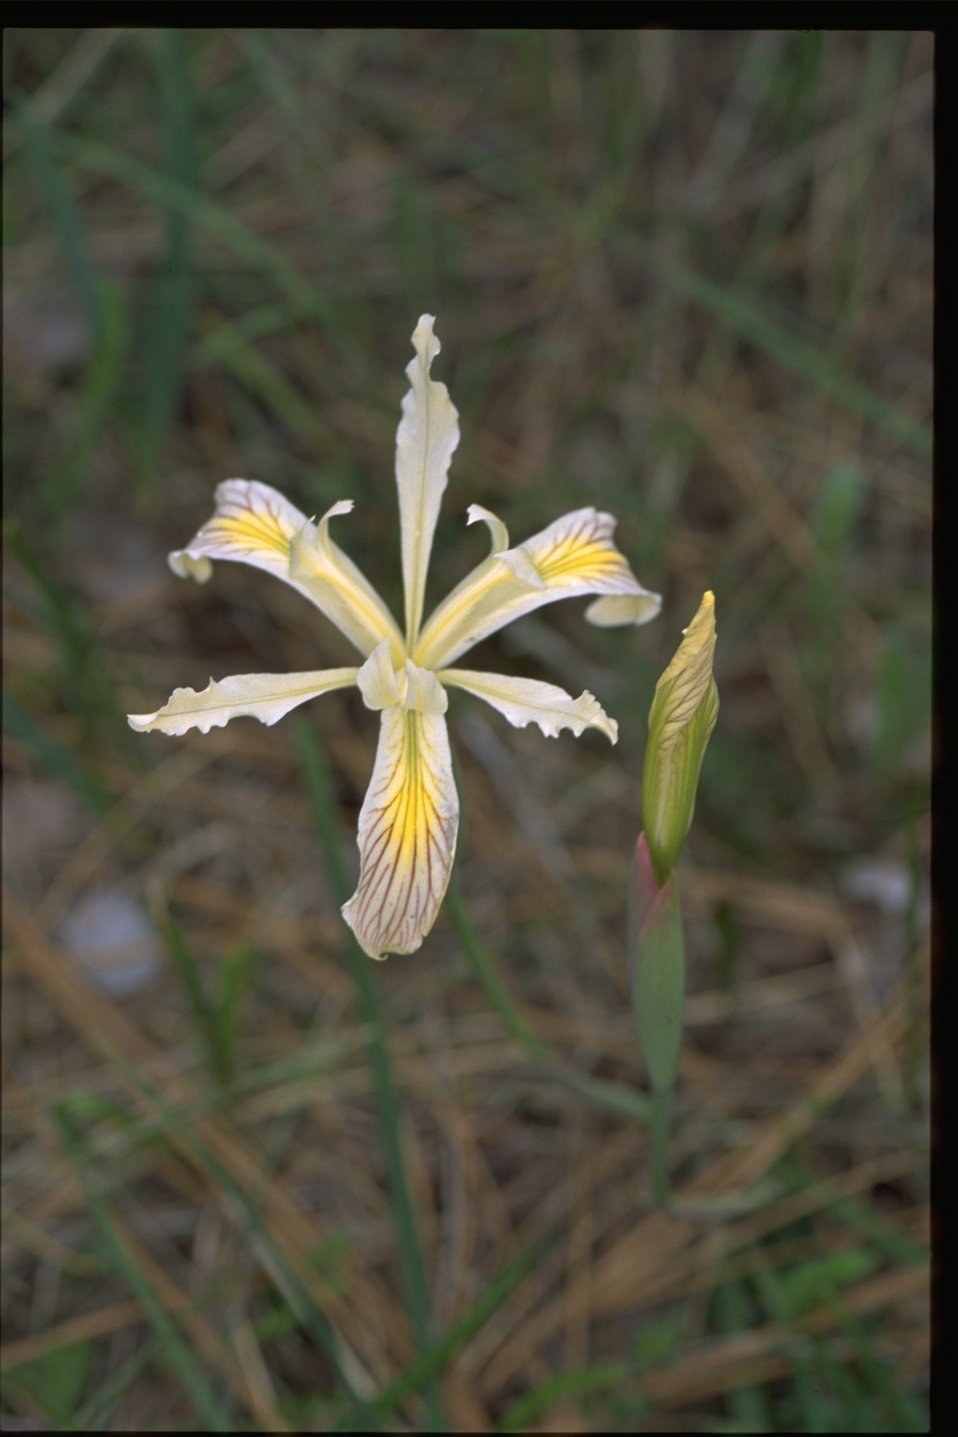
Medium shot of Yellow leaved iris, Iris chrysophylla.